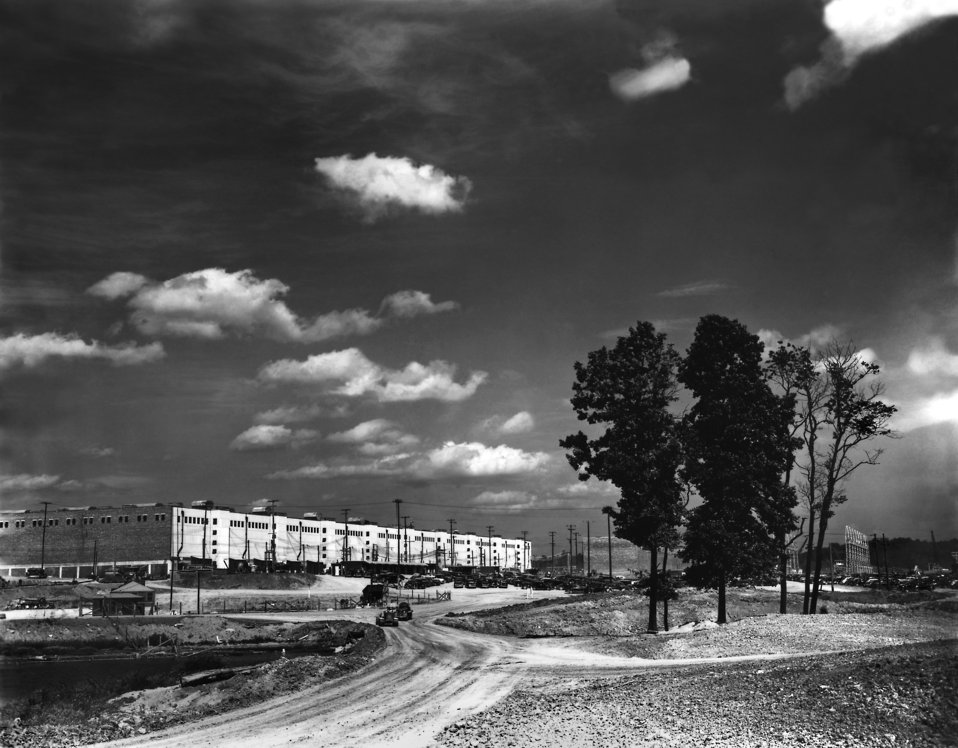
K-400 Bldg. From Hill Looking East K-25 Plant Oak Ridge

K-27-43 DOE photo Ed Westcott 9-1945 Oak Ridge Tennessee